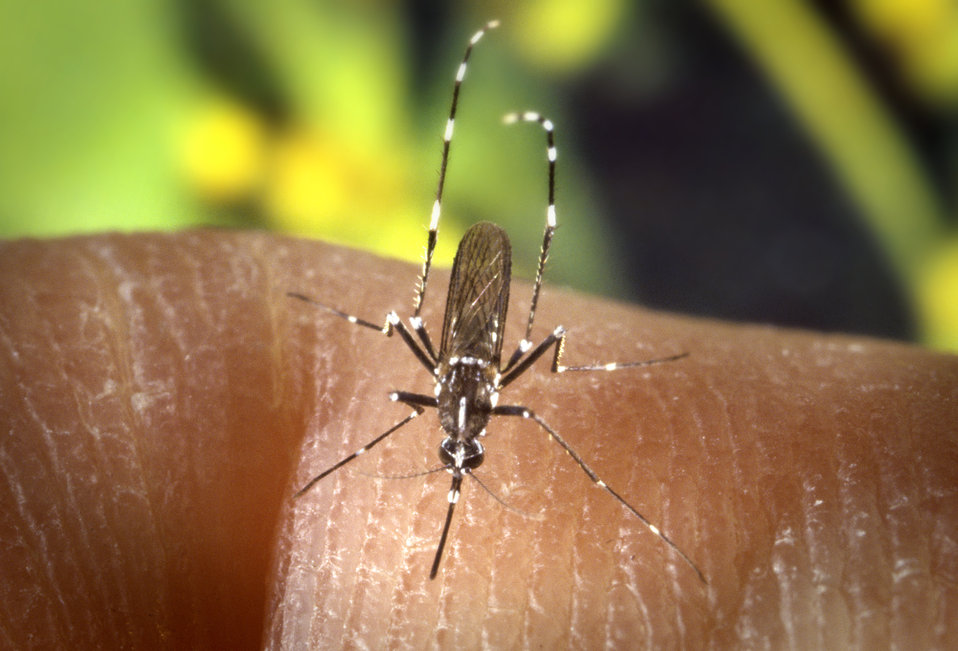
A female Aedes albopictus mosquito feeding on a human host.